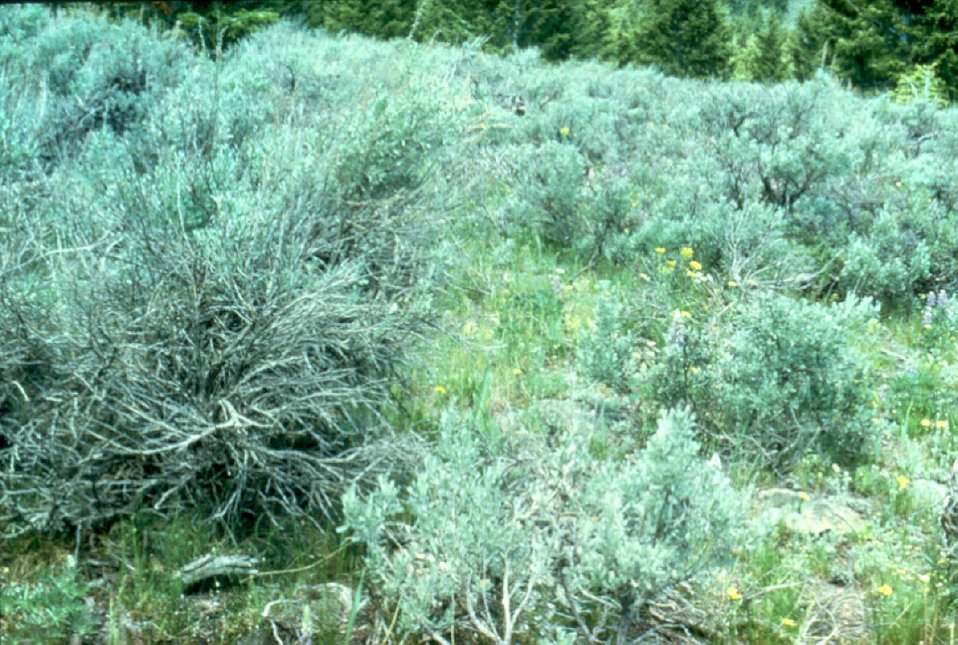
Salmon FIeld Office UCSC Upper Columbia Salmon Clearwater District